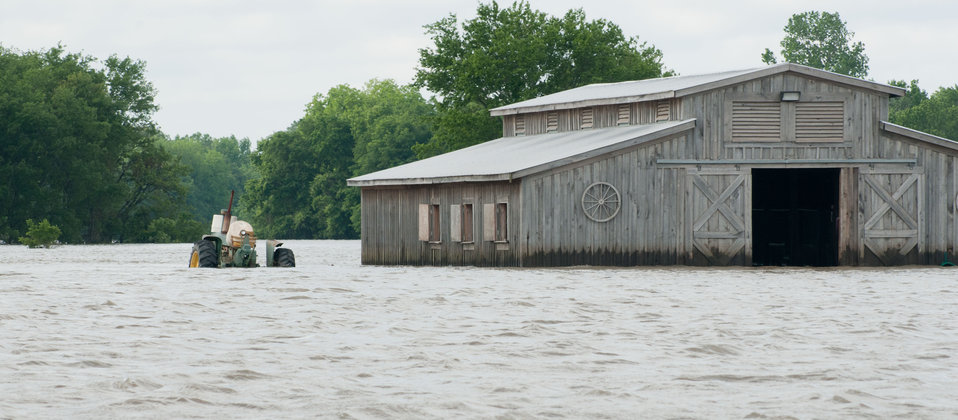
An old tractor outside the barn built by Joe Higdon on his ranch on President's Island. Floodwaters from the Mississippi River still cover the island with 6-12 feet of water on President’s Island near Memphis, TN on Sunday, May 15. 2011.